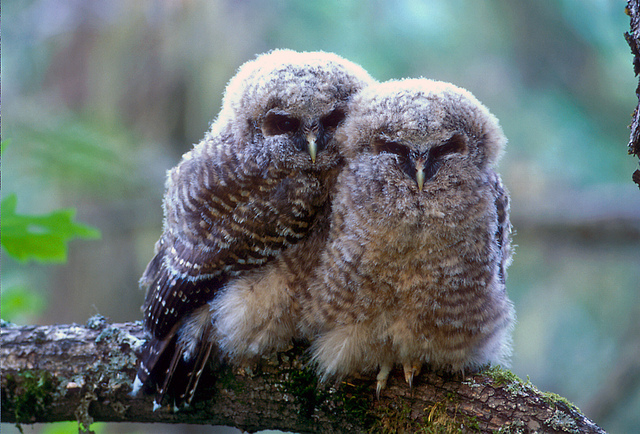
spotted owl chicks